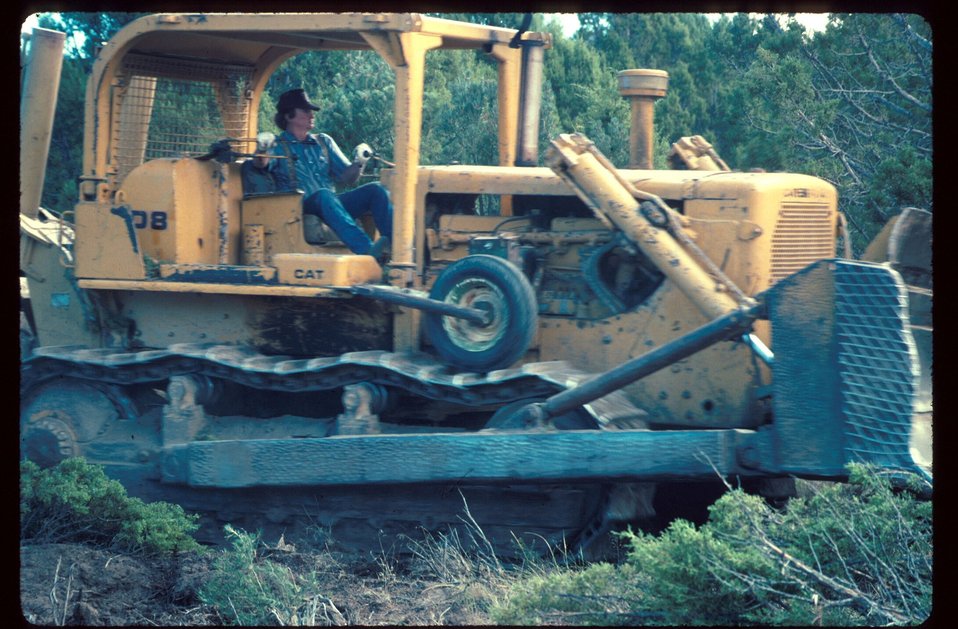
Range Restoration Project